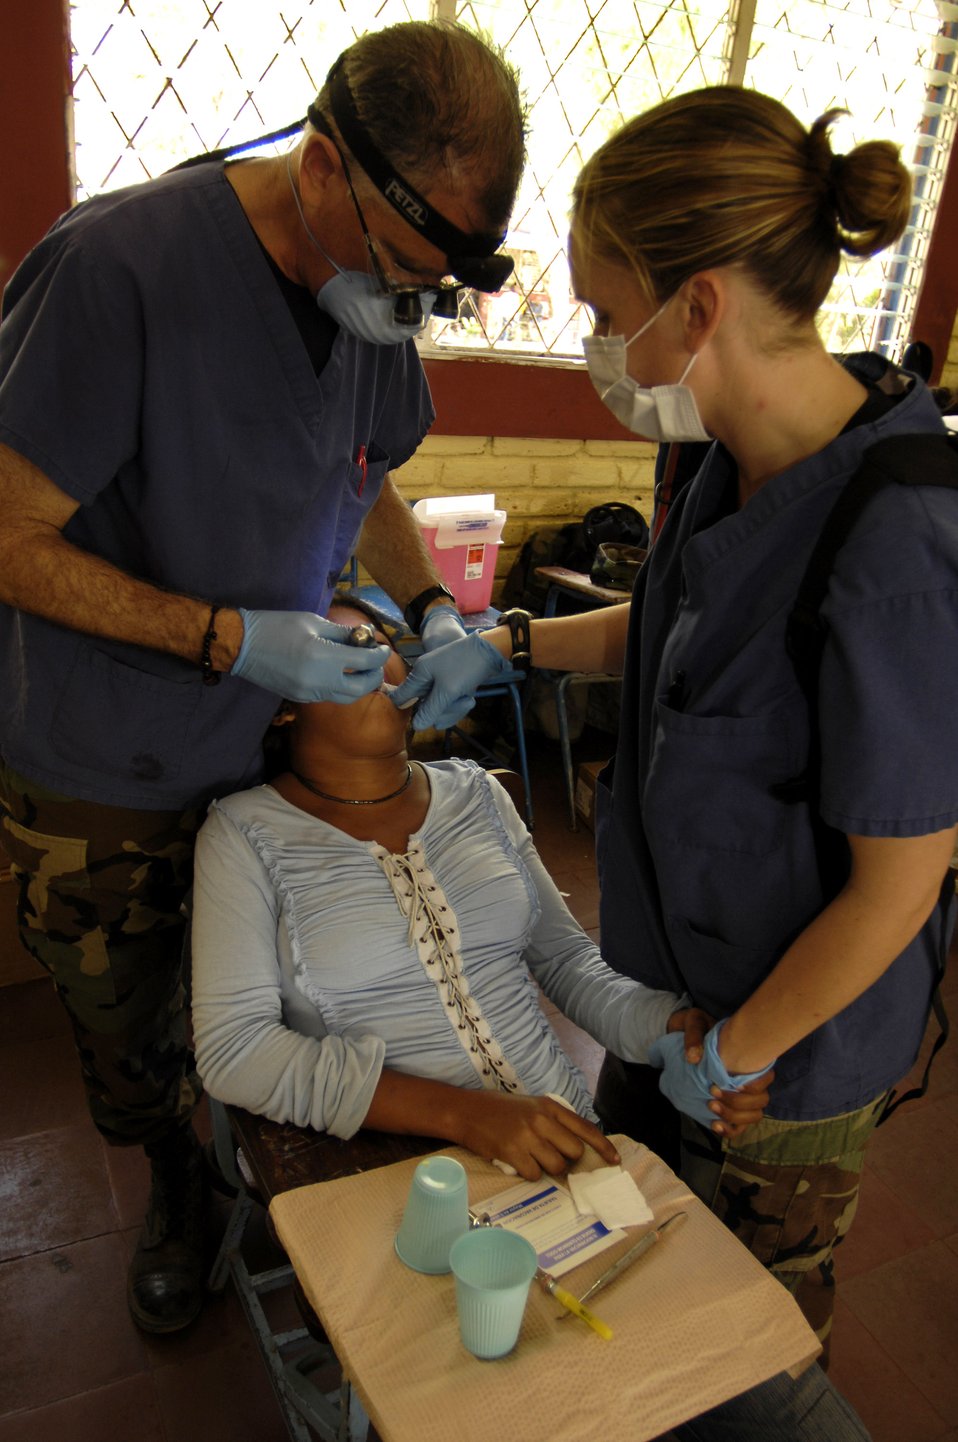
Airmen complete Nicaraguan medical exercise

Lt. Col. Robert Reinhart and Staff Sgt. Elizabeth Aravjo examine a patient's teeth while participating in Medical Readiness Training Exercises in Santa Teresa Feb. 26 during New Horizons - Nicaragua 2007. The $7.25 million joint U.S. and Nicaraguan military humanitarian and training exercise, provides a new school and medical clinic, as well as free health and veterinary care, giving aid and strengthening bonds between the two nations. Colonel Reinhart and Sergeant Aravjo are from the 9th Medical Group at Beale Air Force Base, Calif.